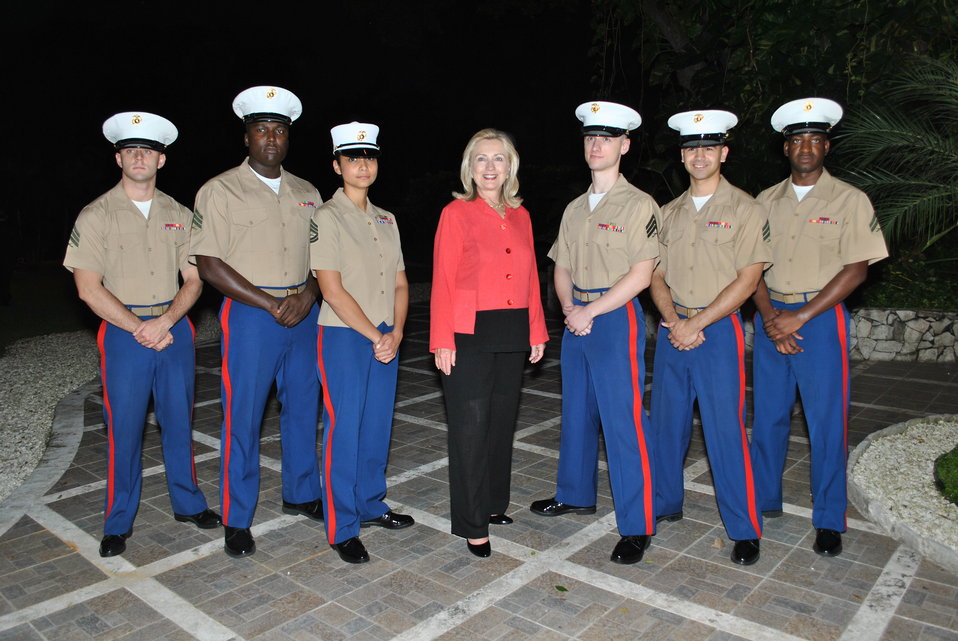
Secretary Clinton Poses for a Photo With the Marine Security Guards

U.S. Secretary of State Hillary Rodham Clinton poses for a photo with the Marine Security Guards (MSG) detachment stationed at the U.S. Embassy in Santo Domingo, Dominican Republic, on October 5, 2011.